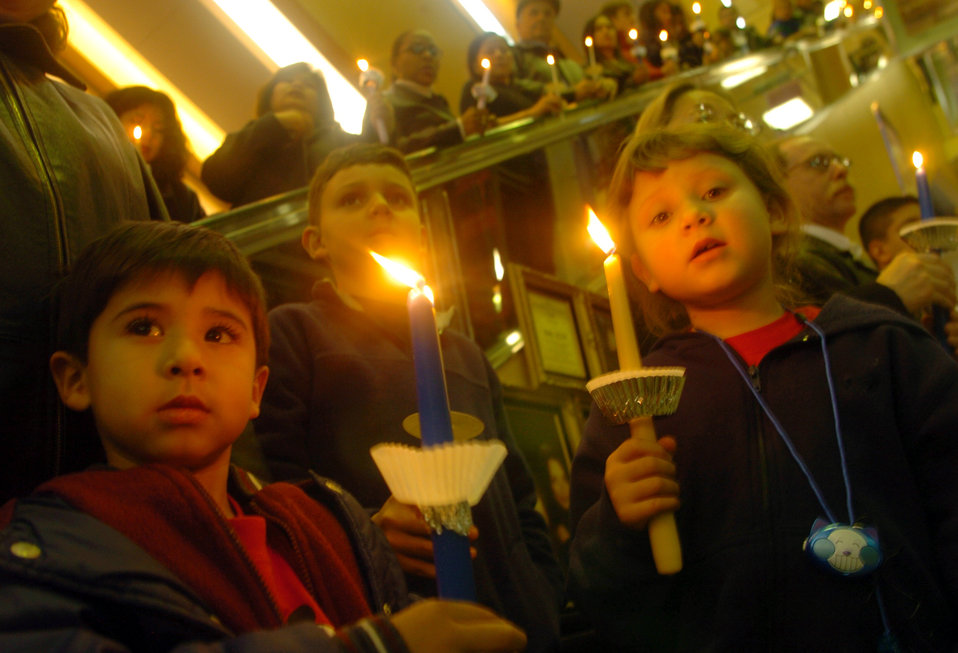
Candlelight vigil

YOKOTA AIR BASE, Japan -- (From left) Louis, Troy and Sierra Hernandez particpate in a candlelight vigil here Feb. 11 for deployed troops. About 200 people paid tribute to American forces deployed in various locations worldwide. The ceremony included songs and prayers for the troops. The Hernandez children's father, Tech. Sgt. Roland Hernandez, is deployed supporting Operation Iraqi Freedom. He is assigned to the 374th Maintenance Squadron.